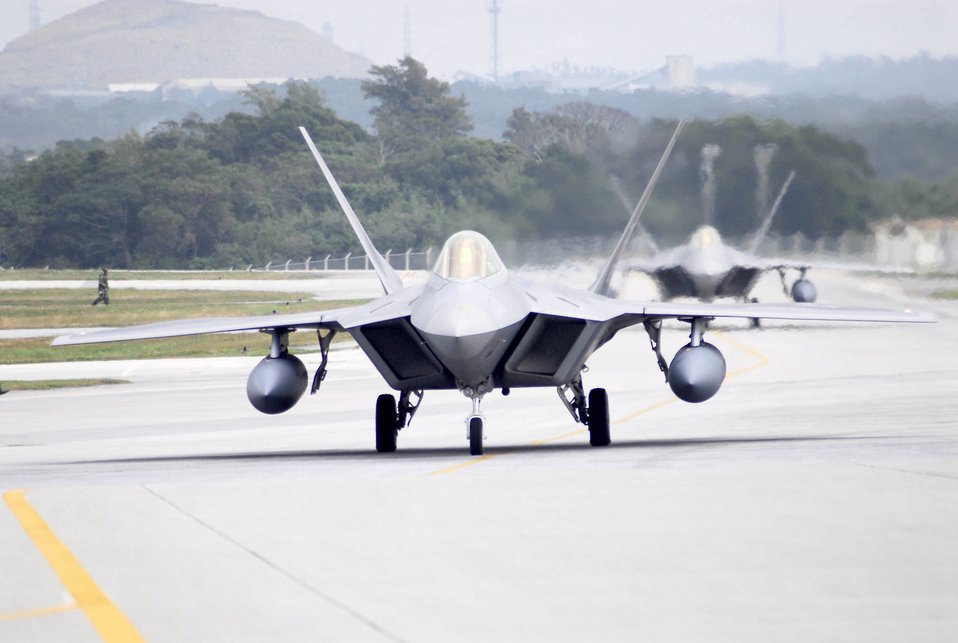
Raptors arrive at Kadena

Two F-22 Raptors taxi after landing at Kadena Air Base, Japan, Feb. 18, marking the aircraft's first overseas deployment. The jets are two of 12 along with more than 250 Airmen deployed from Langley Air Force Base, Va., to Kadena as part of an air expeditionary force rotation.